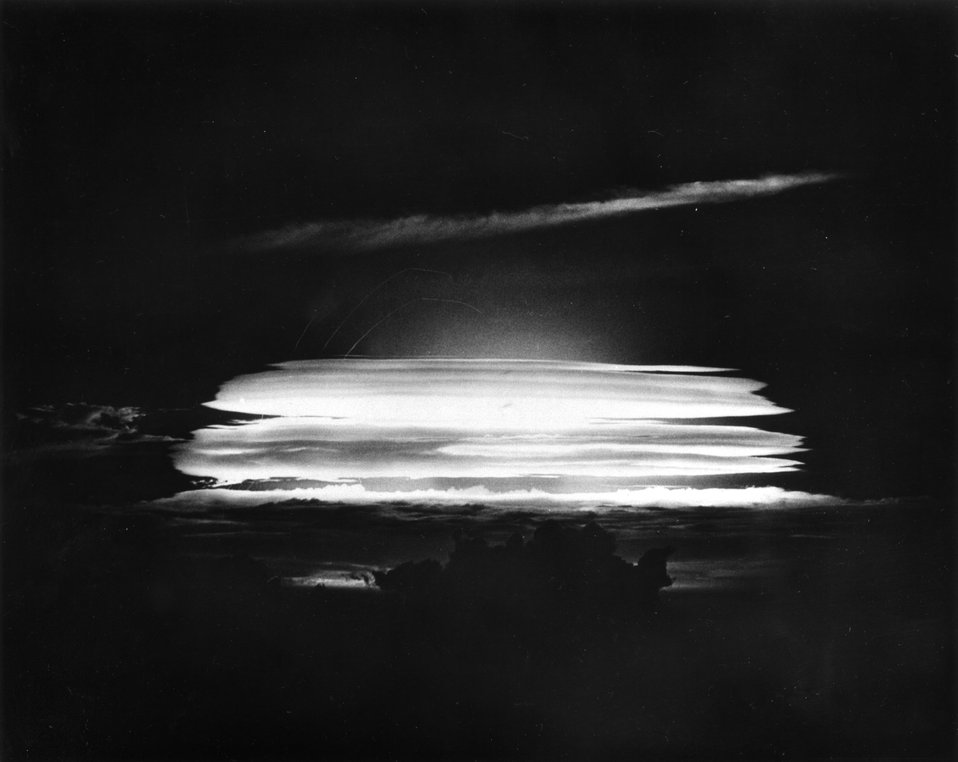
Fireball of the May 21, 1956 test detonation over Bikini Atoll.